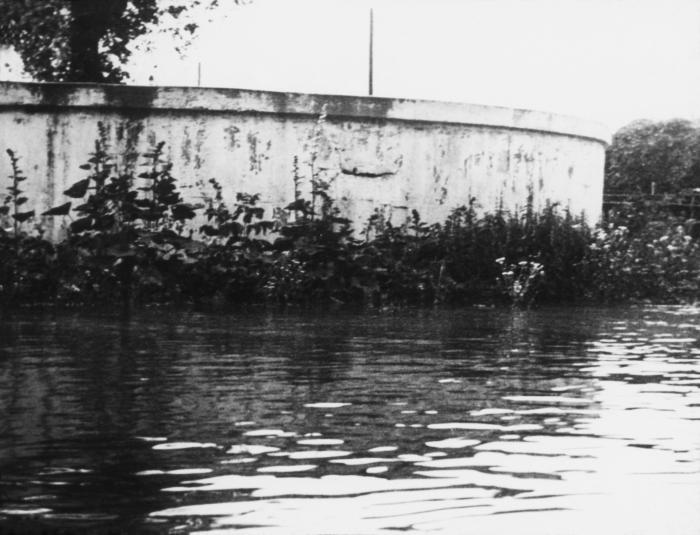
This historic 1939 photograph depicted a flooded 'dug' well in Luverne, Minnesota. Potable water sources can become contaminated with the bacteria found in flood water run-off such as was the situation captured in this image.